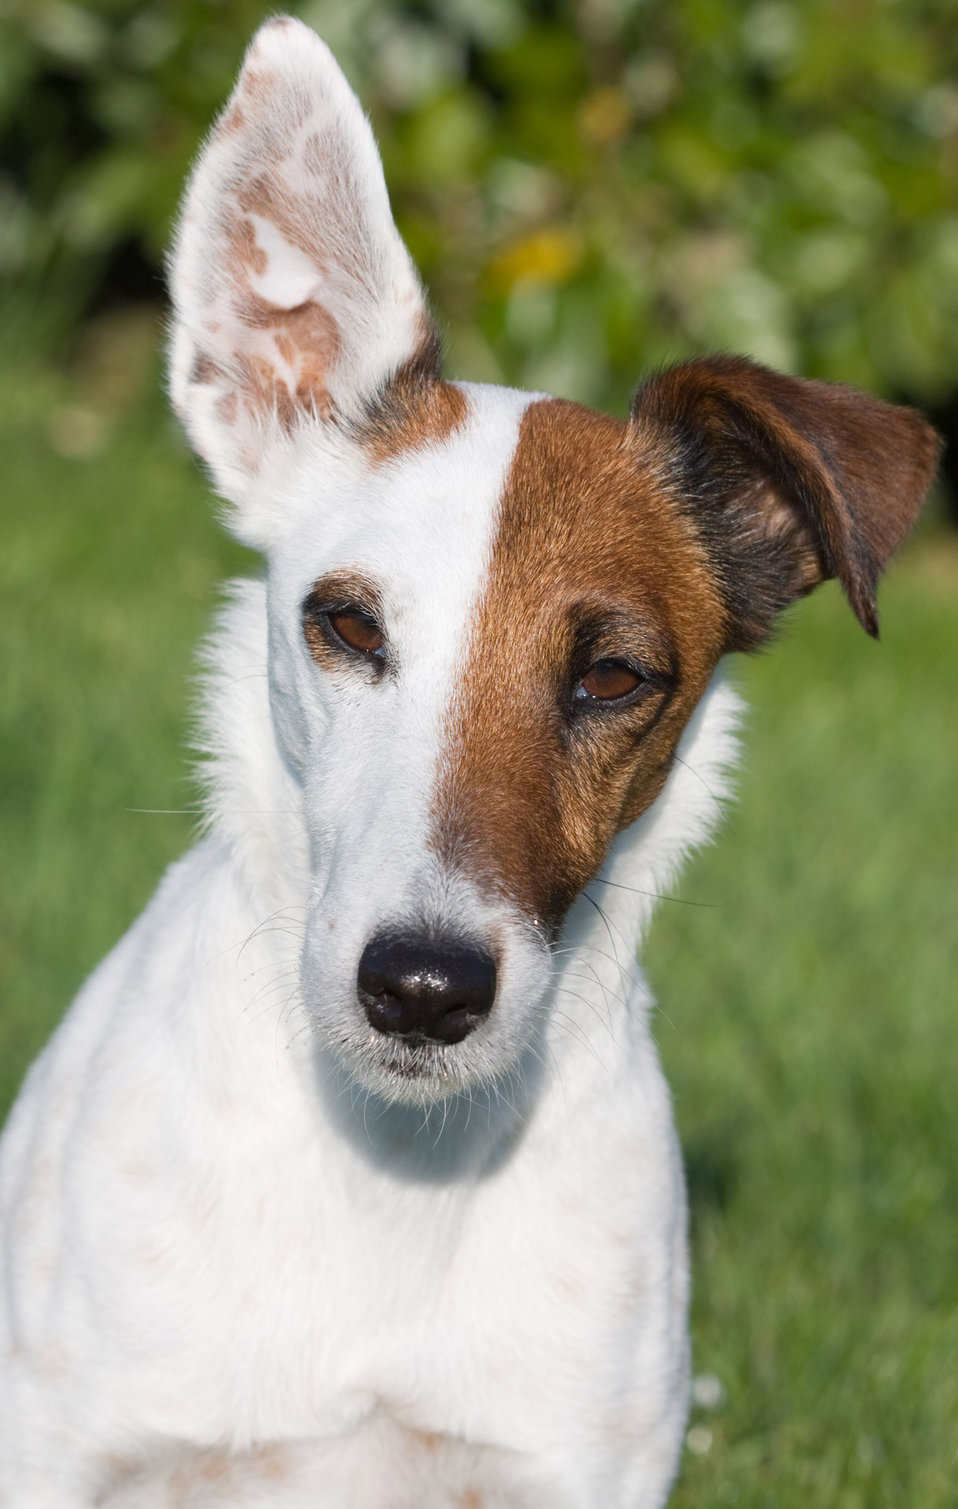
Dog portrait

Close-up portrait of a miniature smooth fox terrier dog.